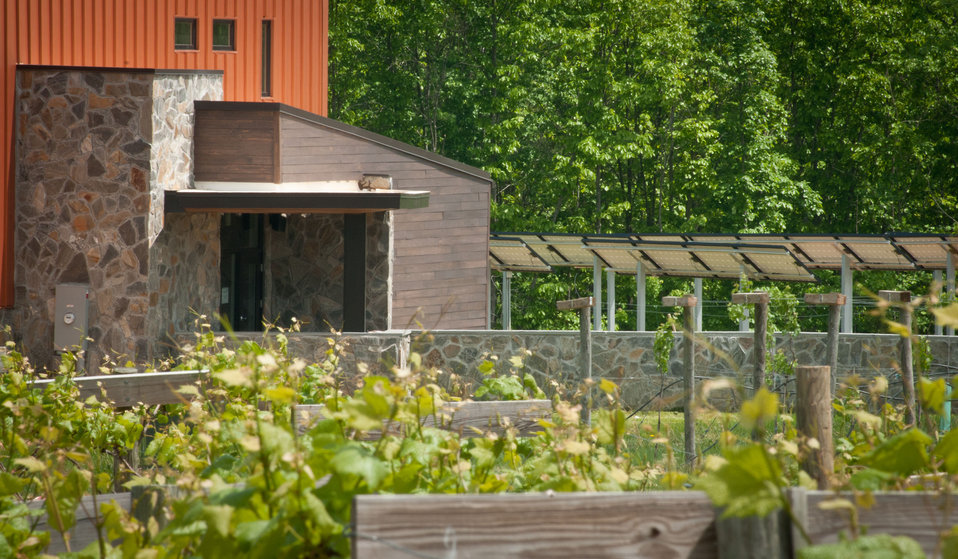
Grape vines and photovoltaic panels (r.) rely on the sun at Cooper Vineyards in Louisa, VA, the first winery on the East Coast and the second in the country to be awarded the fourth and highest, Platinum certification by Leadership in Energy and Environmental Design (LEED).
From a Virginia Wine Board Marketing Office press release, “The process of building a LEED platinum certified building was initially more expensive and arduous than co-owners, Jacque Hogge, MD and Geoffrey Cooper, MD expected, but they were able to get financial assistance from the United States Department of Agriculture. “Know that there are grants available to help with the costs of sustainable building projects,” Hogge advises to other potential green wineries. Cooper Vineyards received 2 of the 3 USDA (U.S. Department of Agriculture Rural Development (RD) Rural Energy Financing program) grants awarded in Virginia in 2010 to help with the expenses of their construction.”
Rural Energy Financing program focuses on loan guarantees, loans and grants to agricultural producers, businesses, cooperatives and rural residents for renewable energy systems and to make energy efficiency improvements.
The tasting room and building collects rainwater from the roof; uses low flow water fixtures to reduce usage by 40%; utilizes structurally insulated panels for the roof and walls; heats and cools the entire building using a geothermal system that includes pipes that are embedded in the parking lot; low-voltage LED lighting with daylight and occupancy sensors provide ample light when it is needed; a solar panel array provides more than 15% of the energy needs for the building, and much of the construction materials are from local and recycled material sources. For more information about USDA please go to www.usda.gov, Rural Development and Rural Energy Financing. LEED was developed by the U.S. Green Building Council (USGBC) is a 501 c3 non-profit organization committed to a prosperous and sustainable future for our nation through cost-efficient and energy-saving green buildings.